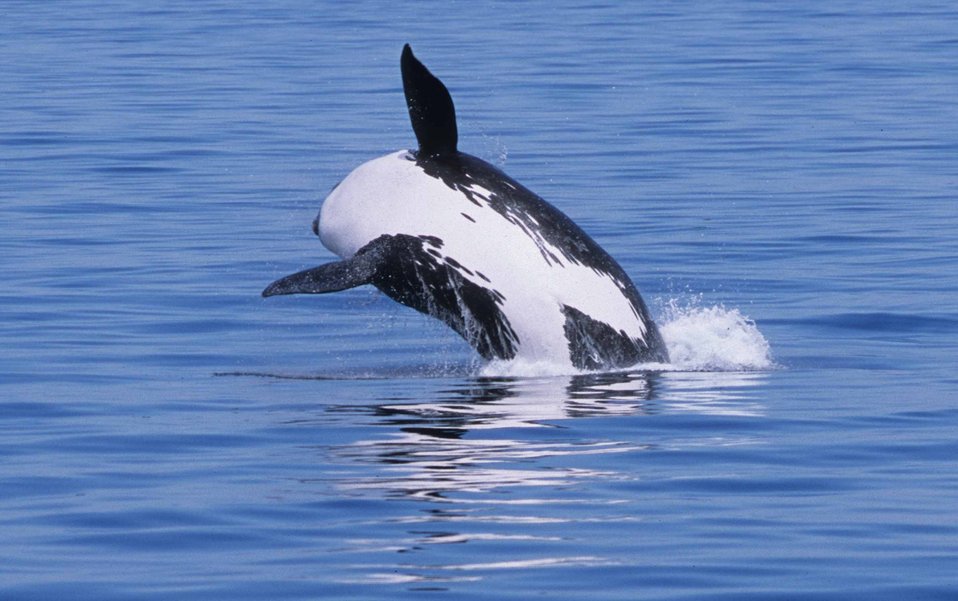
Killer whale or Orca breaching.